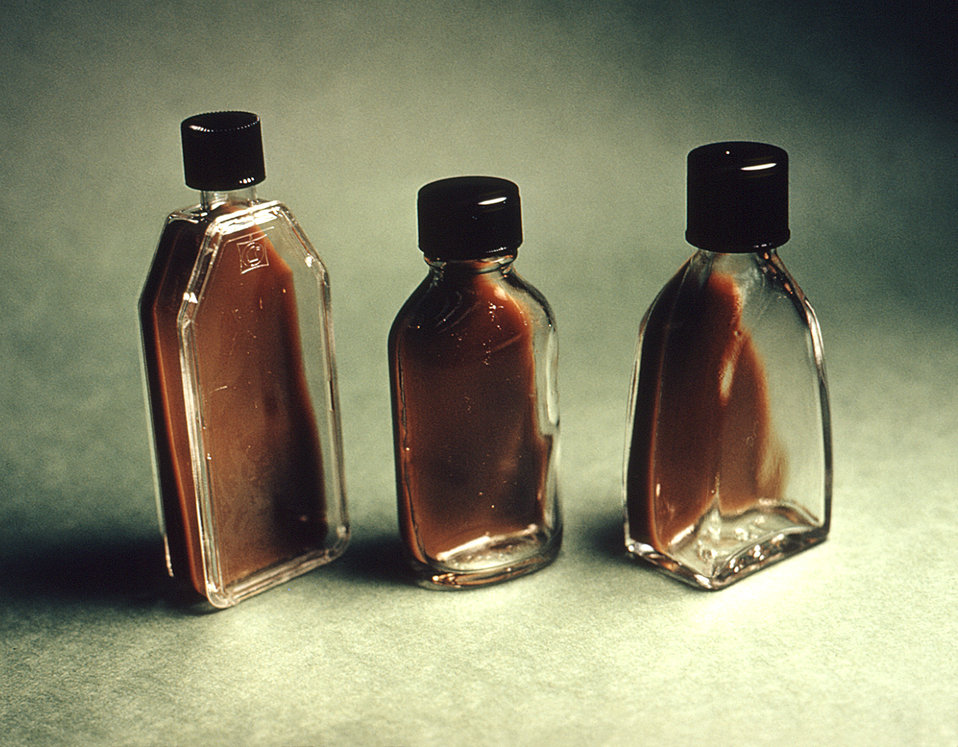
These flasks contain 'Transgrow' medium used to transport an N. gonorrhoeae specimen to a laboratory for testing.